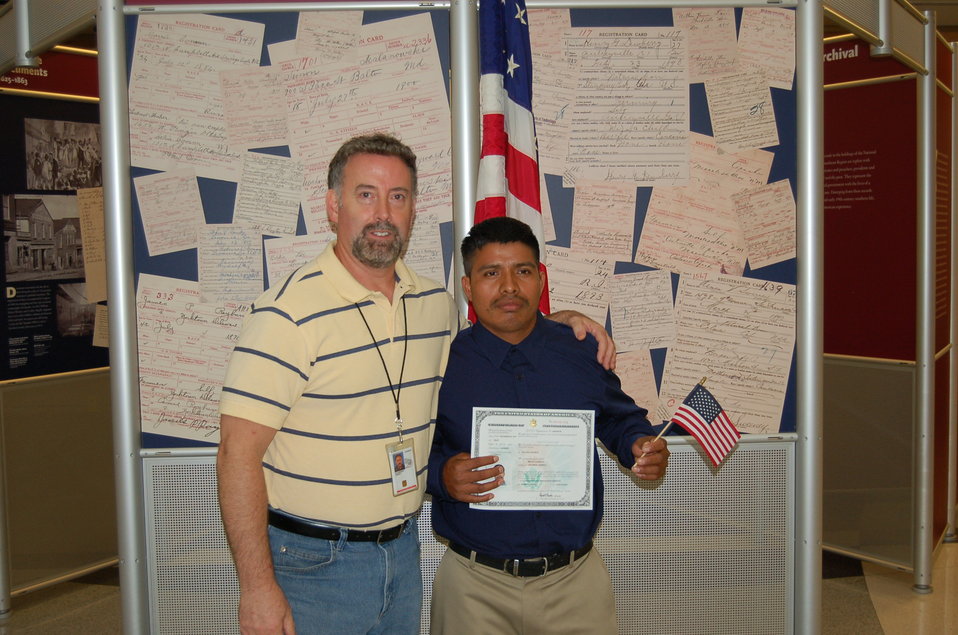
New Citizens